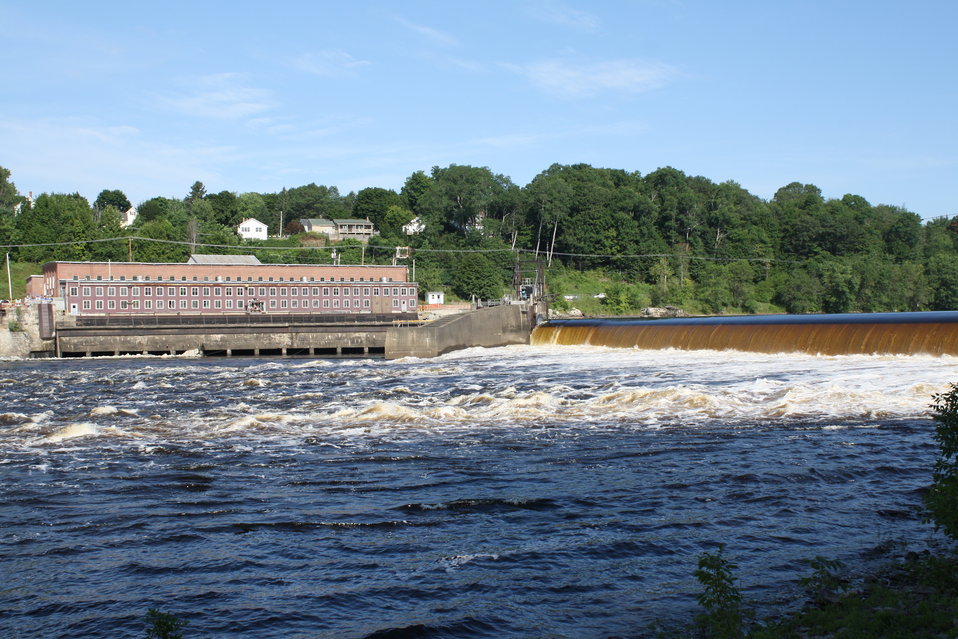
Veazie Dam Removal

The Penobscot River Restoration Trust owns the Veazie Dam, located on the Penobscot River in Veazie and Eddington, Maine, near the head of tide. The current buttress-style dam was built in 1913, and dams have been documented at the site as early as the 1830s, blocking fish passage for nearly 200 years.